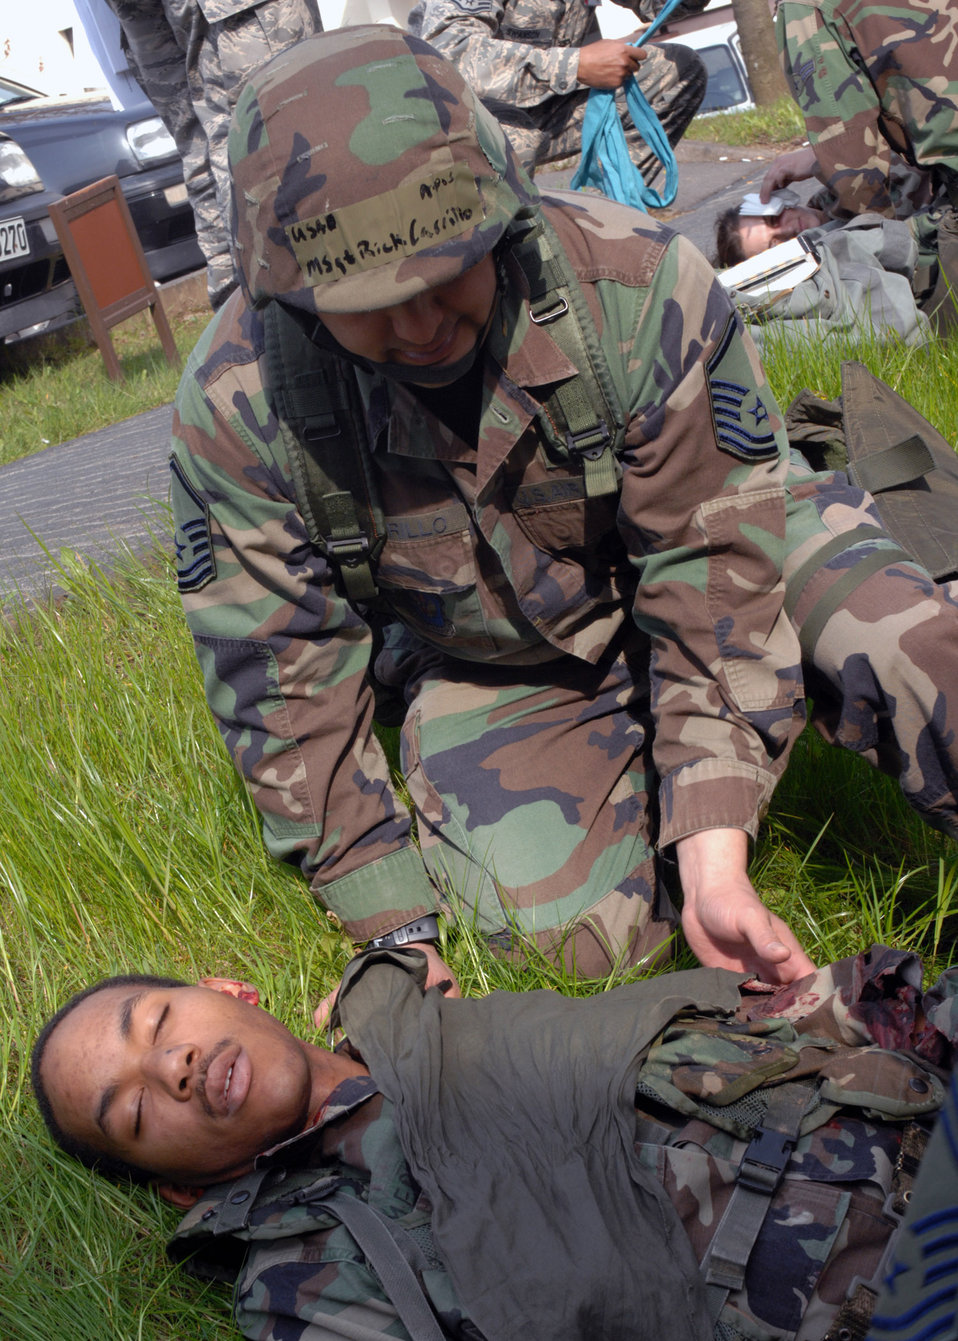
Operation Saber Crown 08-06 -- Ready to save lives, defend the base

Master Sgt. Rick Carrillo, attends to victim